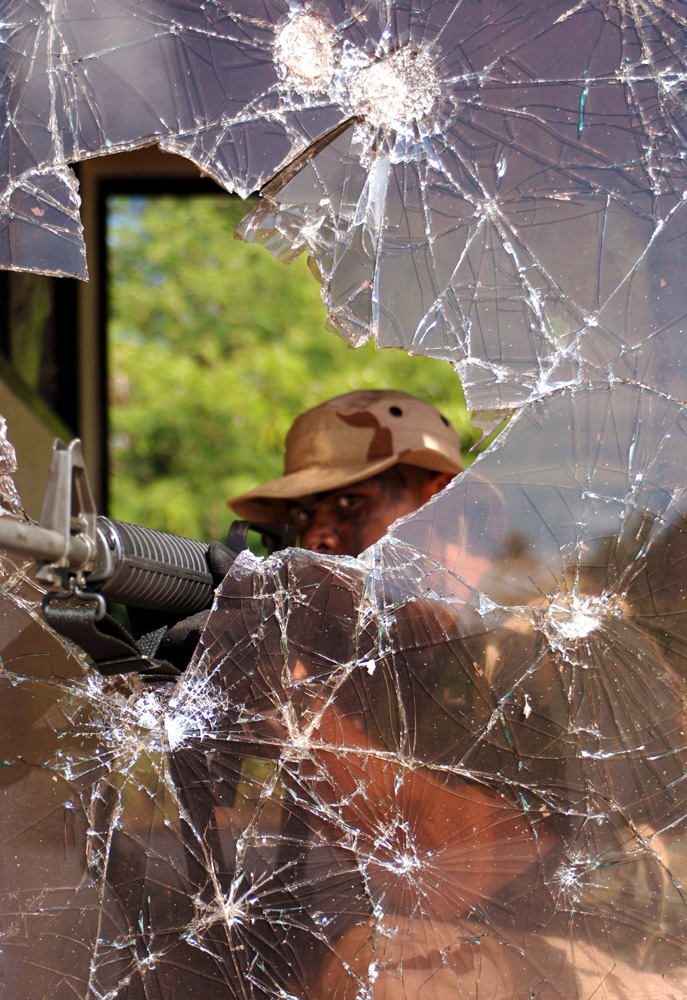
Broken Glass

ANDERSEN AIR FORCE BASE, Guam -- Staff Sgt. Chad Umipeg attacks a convoy during Exercise Jungle Bull here recently. He is assigned to the 36th Civil Engineer Squadron.